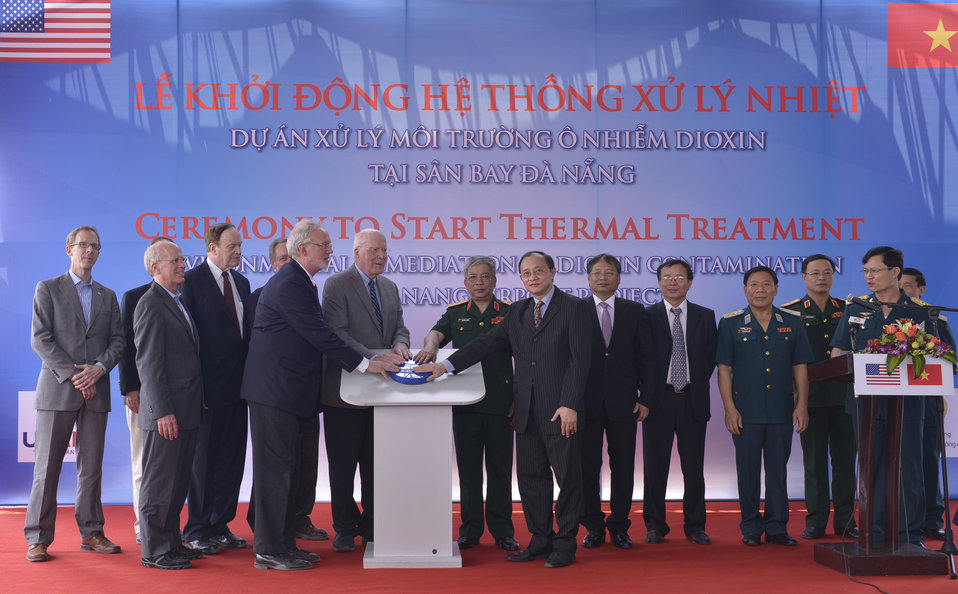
Senator Leahy, Senior Lieutenant General Nguyen Chi Vinh, Vietnam’s Vice Minister of National Defense, U.S. Ambassador David Shear and Vice Chairman of Vietnam’s National Assembly’s Foreign Relations Committee Ha Thuy Thong switched on the thermal t

Danang, April 19, 2014.